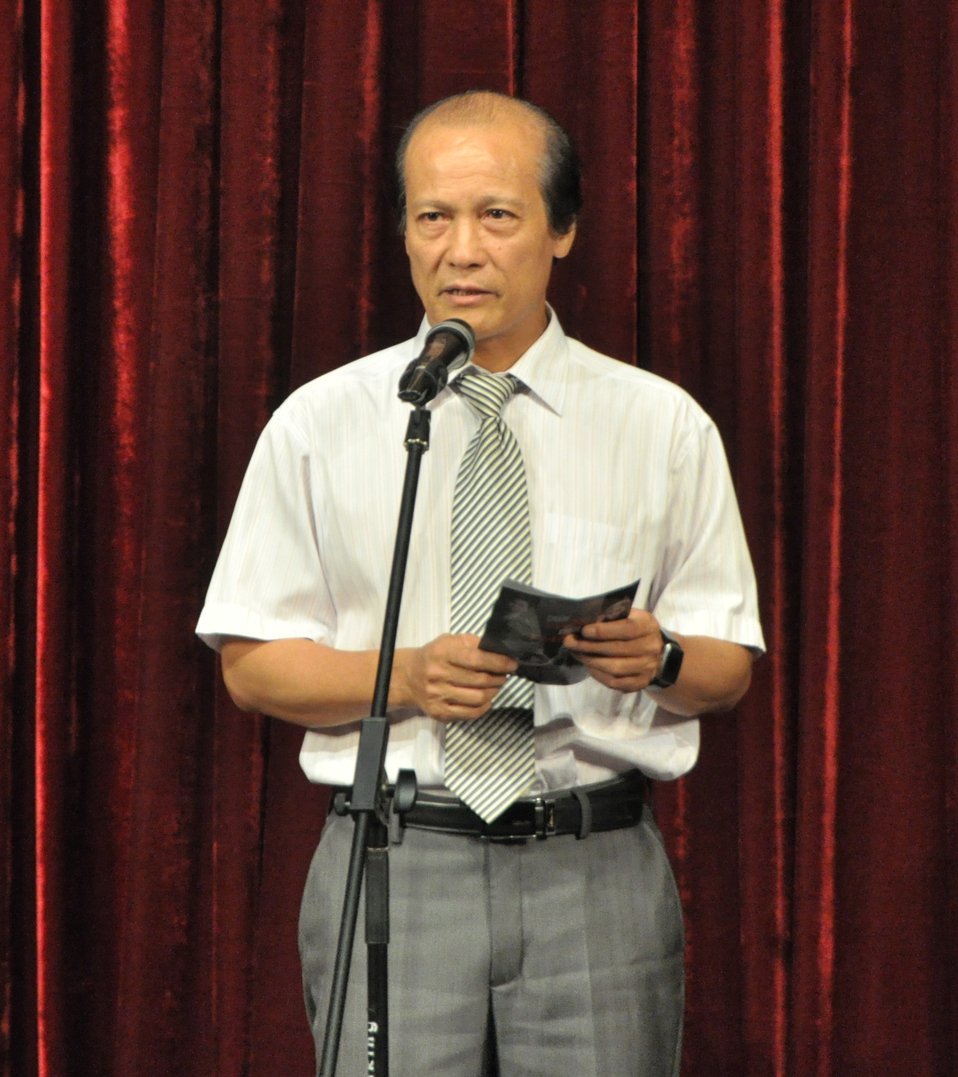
PEPFAR Musical Questions and Exclamations